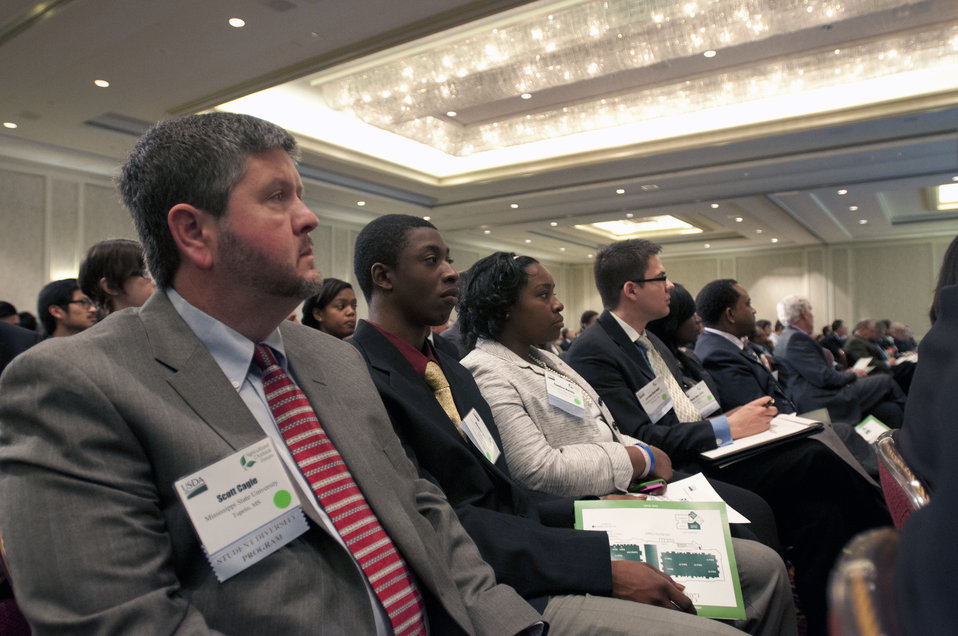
Audience members listen to speakers at the 2013 Agricultural Outlook Forum, in Arlington, VA. on Feb. 21, 2013.